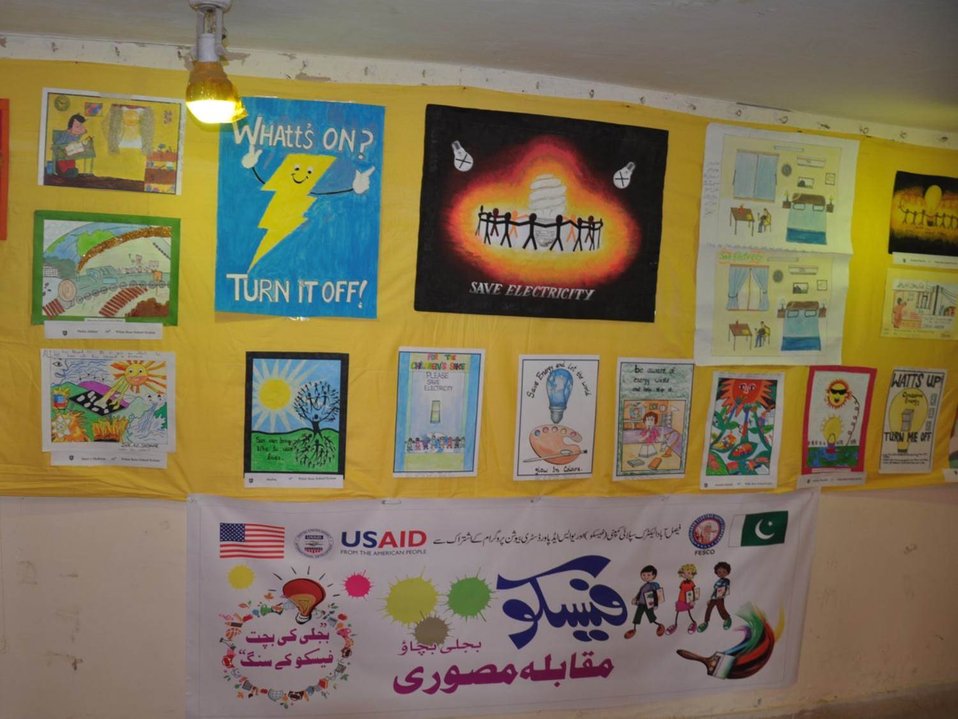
USAID organises Painting Competition on Energy Conservation in FESCO operated region

“On behalf of Faisalabad Electric Supply Company (FESCO), I would like to thank the USAID Power Distribution Program for holding this painting competition at FESCO and for promoting our image as a friendly organization.”
FESCO CEO
Dr. Rana Abdul Jabbar Khan

The Power Distribution Program held an Energy Conservation Painting Competition in the FESCO region. Children from over 18 schools participated sending submissions of up to 650 pieces of artwork on the themes “conserve electricity for a brighter future” and “save electricity for the prosperity of agriculture and industrial sectors”. The paintings were exhibited in a special gallery and winners were awarded certificates and gifts.